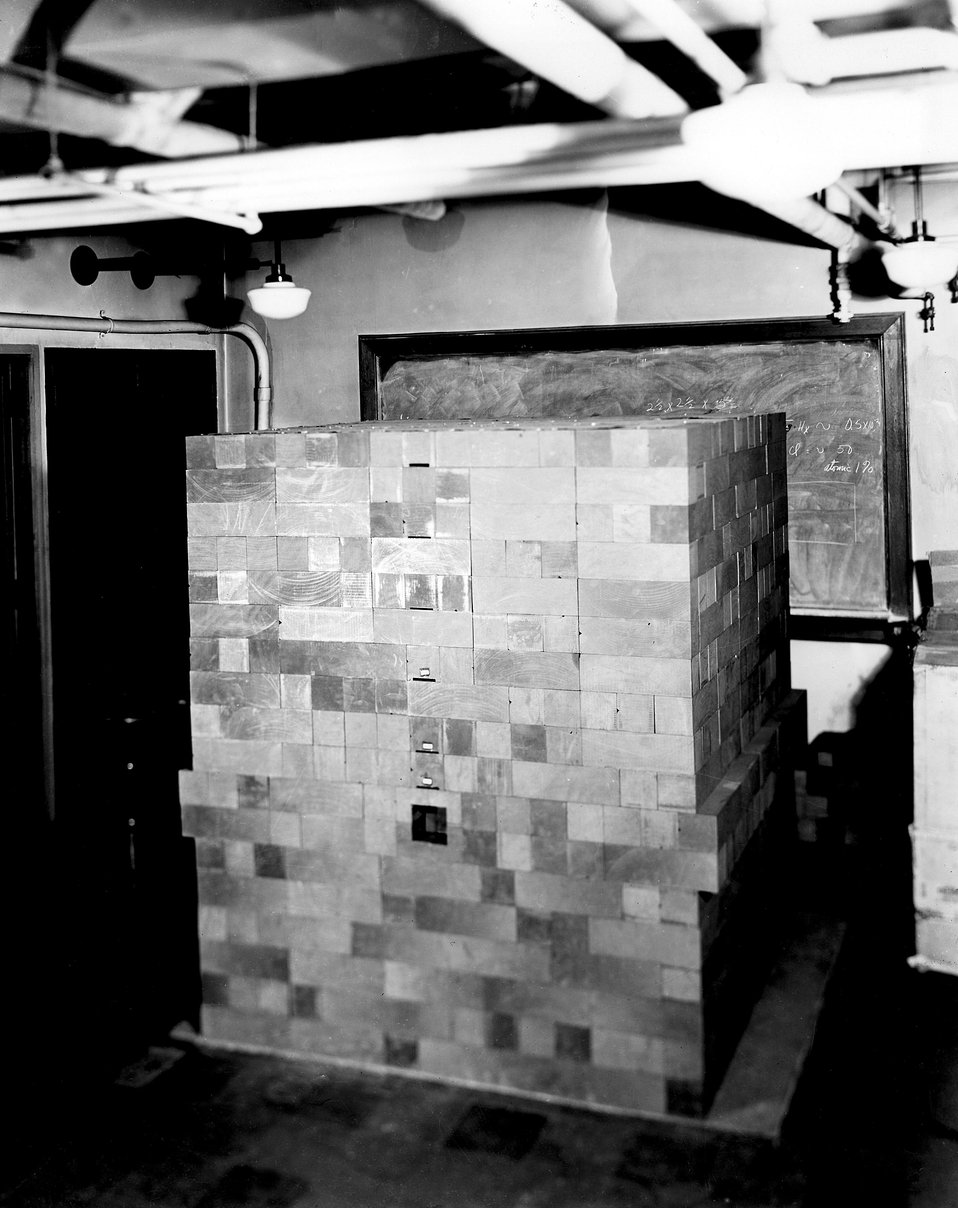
This photo shows one of a series of graphite test piles. This type was called a sigma pile..